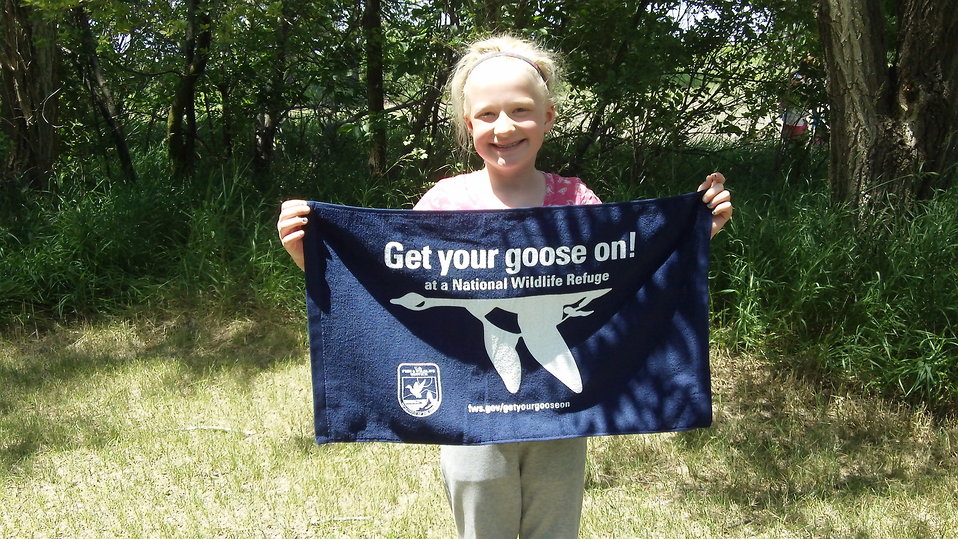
Get Your Goose On!

Photo taken at Huron Wetland Management District in east-central South Dakota.